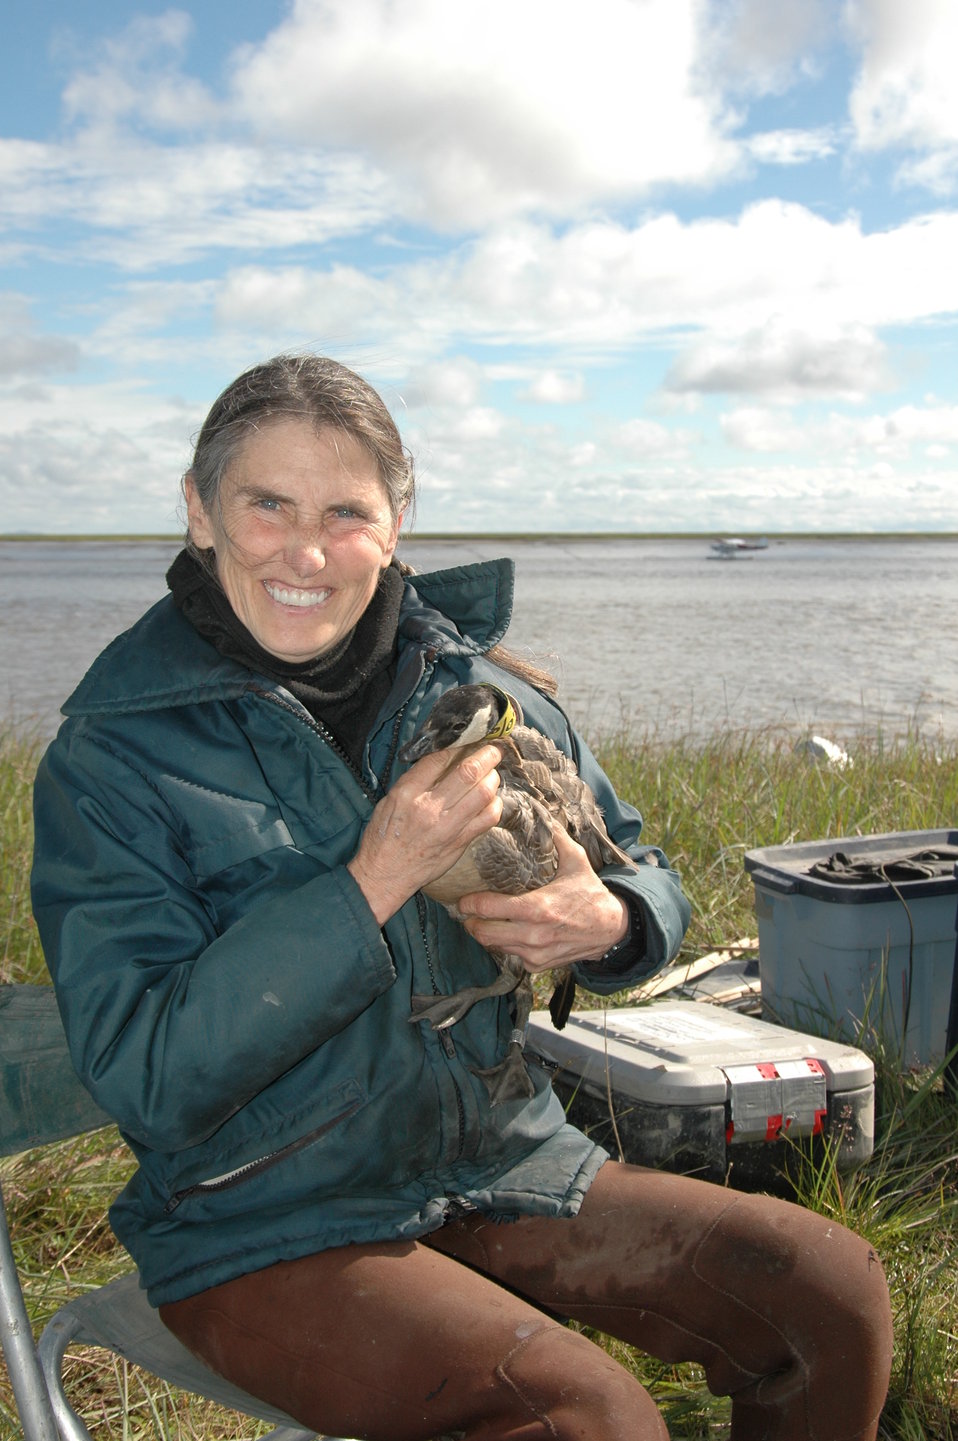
Banded and collared

A group of biologists, volunteers, biotechs, refuge staff, migratory bird management staff, etc joined forces to band and collar cackling cackling geese on the Yukon-Kuskokwim Delta.

USFWS Yukon Delta NWR